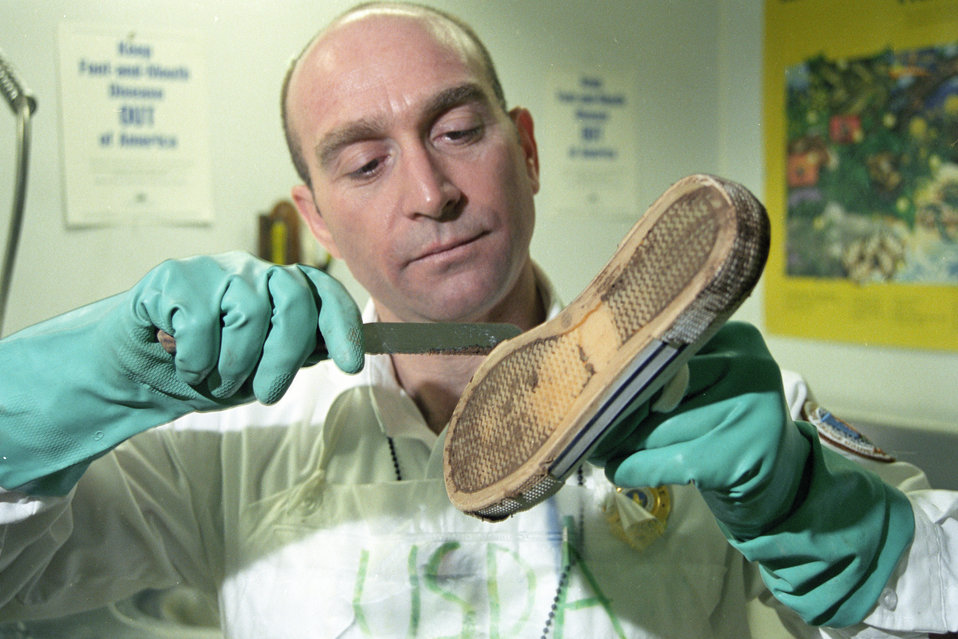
U.S. Department of Agriculture (USDA) Animal and Plant Health Inspection Service (APHIS) inspector disinfects a pair of shoes confiscated at customs entry at Washington Dulles International Airport in Chantilly, VA on March 14, 2001. Foot and Mouth Disease can be brought into the U.S. through contraband food and from travelers’ shoes. American tourists and European visitors that have trod through contaminated fields risk bringing the devastating disease into this country. USDA’s APHIS inspectors working with U.S. Customs and Border Protection carefully monitor incoming visitors and returning American tourists.